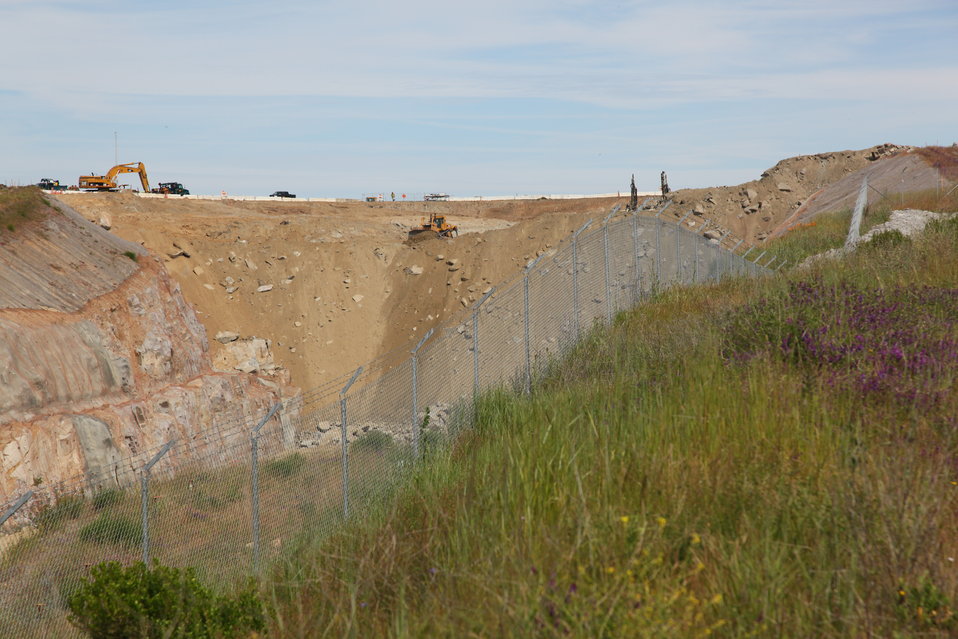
Work continues on spillway control structure at Folsom Dam

FOLSOM, Calif. (April 28, 2011) – Excavation work (left) for the control structure of the auxiliary spillway – part of the third phase of the Folsom Dam Joint Federal Project (JFP) – continued here April 27. Ongoing work for the JFP at Folsom Dam will require daily explosive blasting until October of this year, said David Neff of the U.S. Army Corps of Engineers Sacramento District’s engineering division. For the public’s safety, the Folsom Crossing roadway and bridge are closed Monday through Friday from 1:30 p.m. to 2:30 p.m. during blasting.